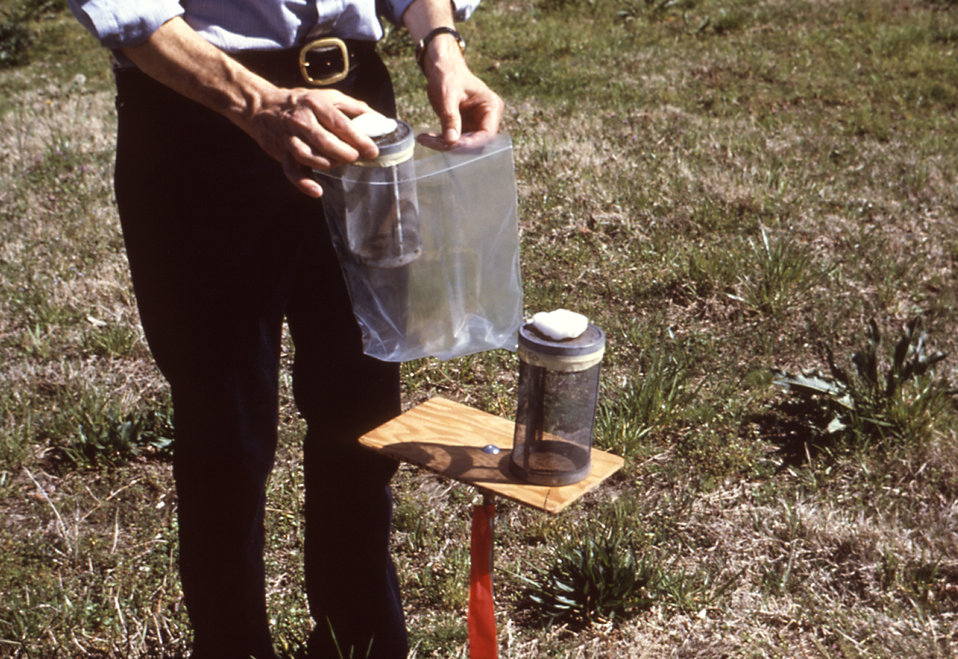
This 1981 photograph depicted one of two bioassay capture cages being loaded into a plastic bag, which was then shipped after having been used to collect a catch of mosquitoes from the environment.